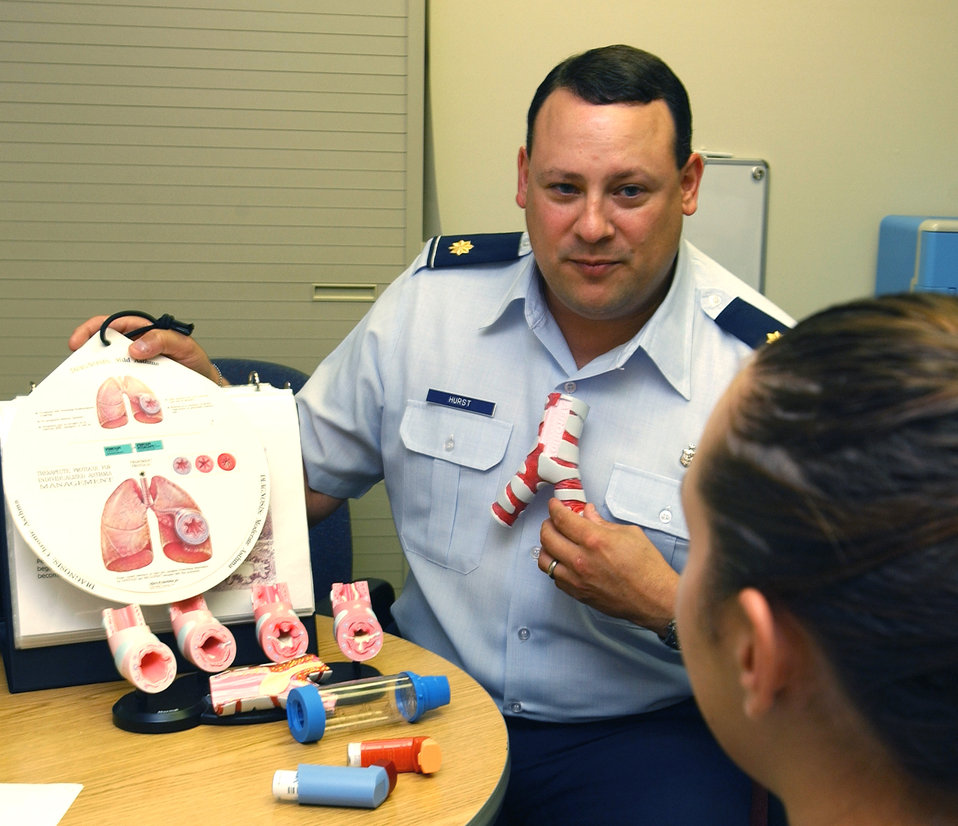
Major receives Asthma Educator Certification

Maj. James Hurst discusses the effect of asthma medication on the respiratory system with trainee Shea Hofferica of the 319th Training Squadron at Lackland Air Force Base, Texas. Major Hurst is the Allergy and Immunization Flight nurse manager at the 59th Medical Wing at Wilford Hall Medical Center.